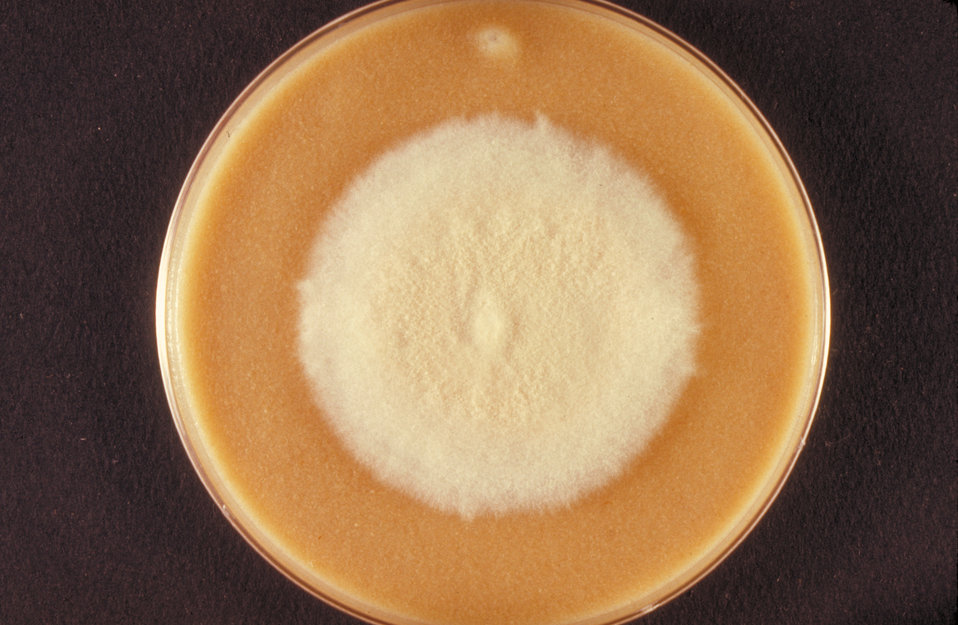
This is a top view of a cereal agar plate culture growing the fungus Microsporum persicolor.